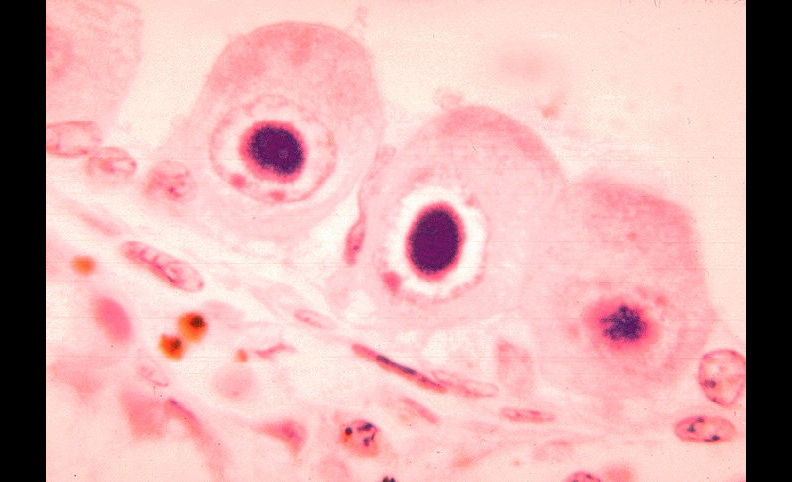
Histopathology of cytomegalovirus infection of kidney.